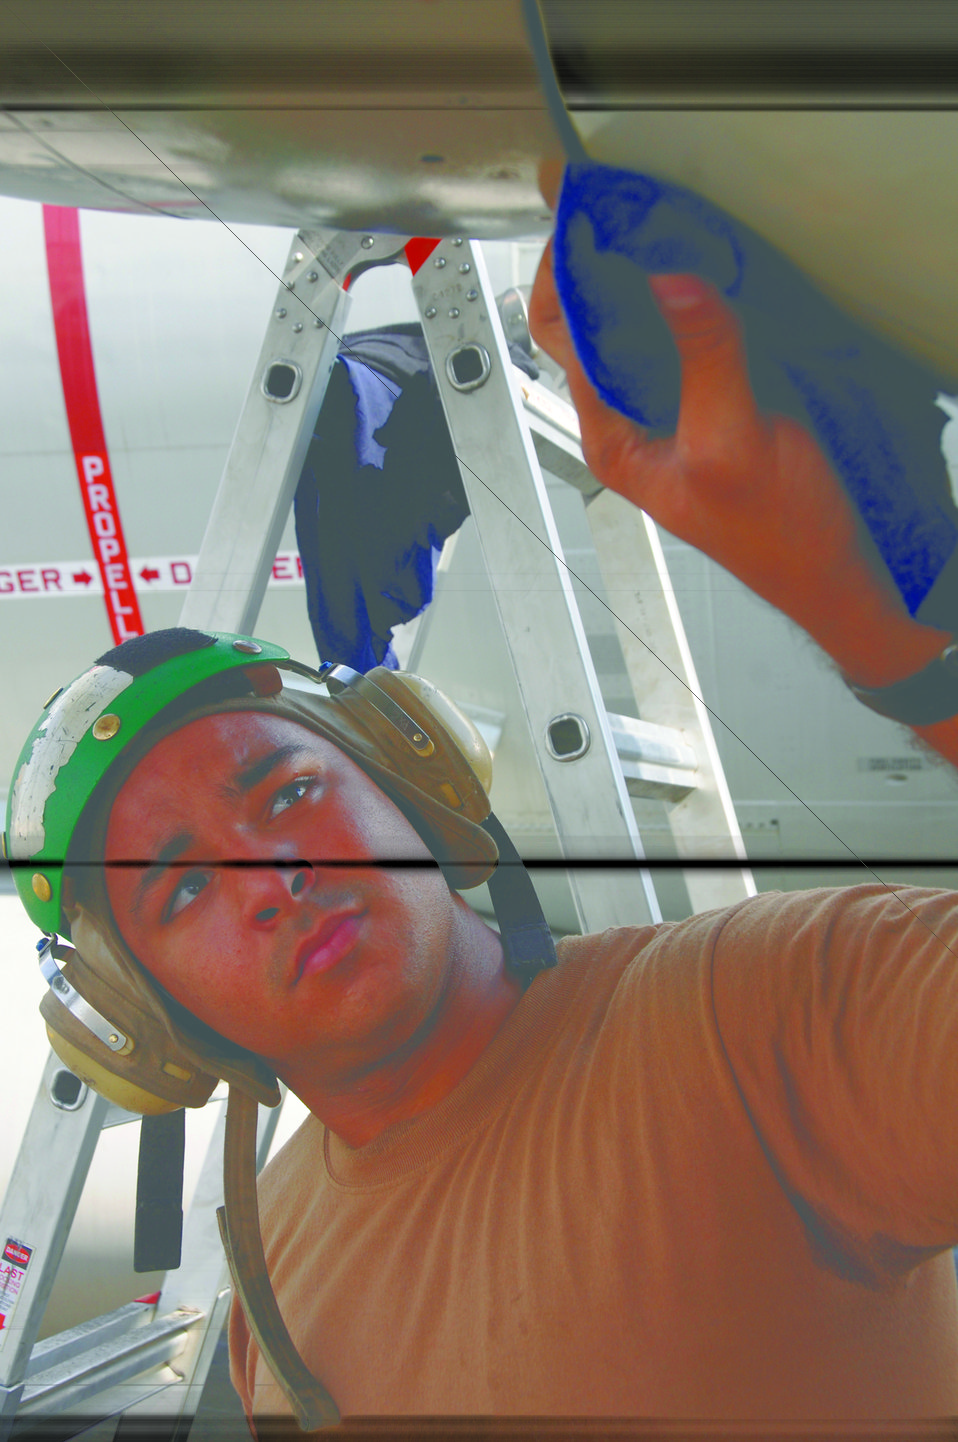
VP-46: GWOT Jack of all trades

Aviation Machinist Mate Airman Eric Dejesus uses a towel to clean off a P-3 Orion engine after maintenance has been performed to the aircraft Oct. 27, 2008, at a base in Southwest Asia. These aviation machinists are responsible for providing maintenance to the aircraft to ensure the planes can fly and complete their mission in the war on terrorism. Airman Dejesus, a native of Orlando, Fla., is deployed from Naval Air Station Whidbey Island, Wash.